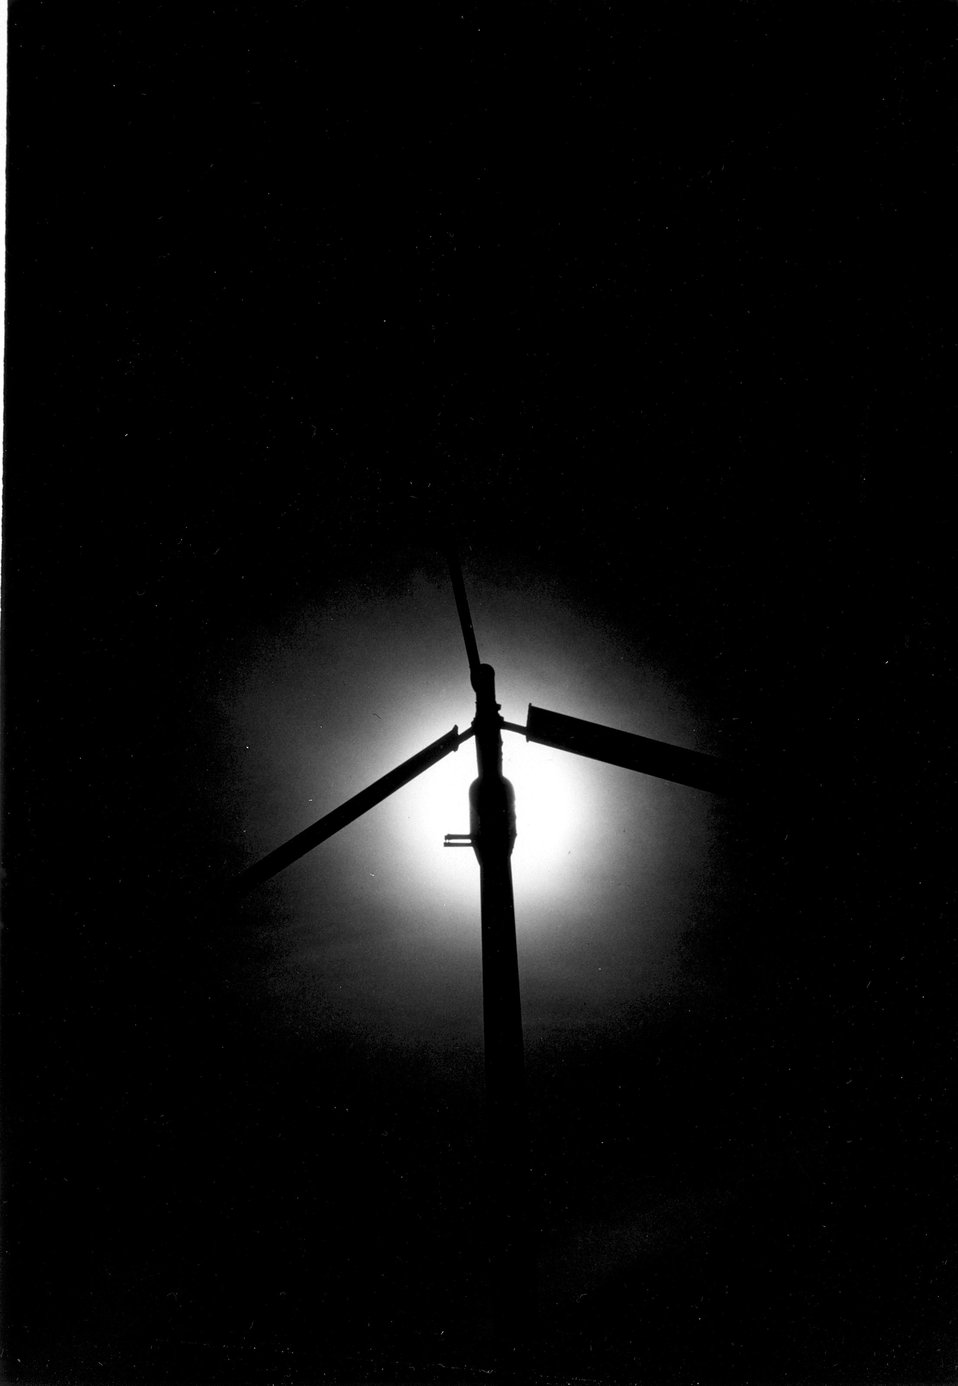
The Gruman Windstream-25 is a three-bladed wind energy conversion system being tested at ERDA's Rocky Flats, Colorado facility. c. 1977